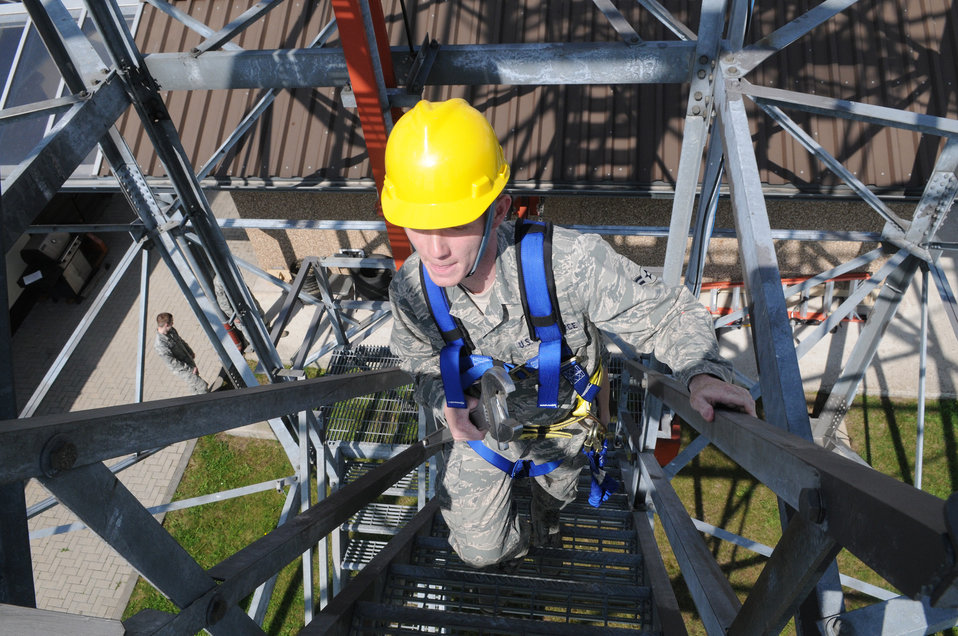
Long way up

Airman 1st Class Jacob Steele climbs a radar system tower July 5, 2011, at Spangdahlem Air Base, Germany. Steele is a ground radar systems apprentice assigned to the 52nd Communications Squadron.